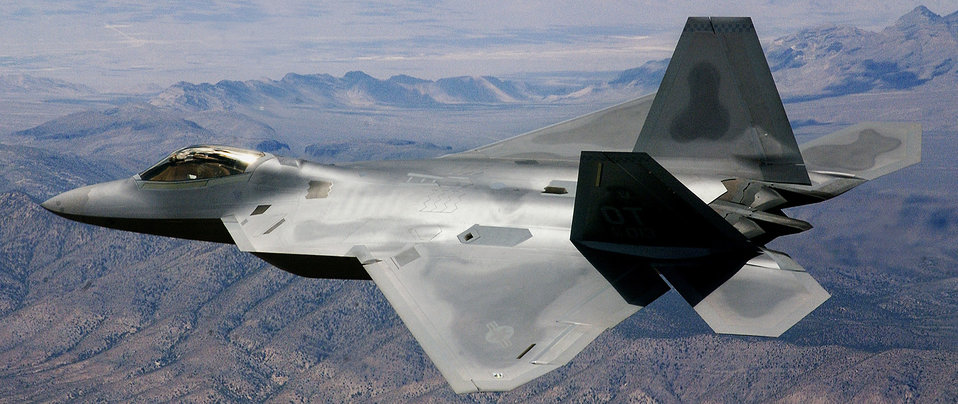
Air Force signs multiyear contract for F-22

An F-22 Raptor heads out for an operational test mission. Air Force officials signed a production contract with Lockheed Martin Corp. to add 60 F-22s to the Air Force inventory by December 2011. The F-22 uses a combination of stealth, supercruise, maneuverability, and integrated avionics, coupled with improved supportability, and represents an exponential leap in warfighting capabilities.